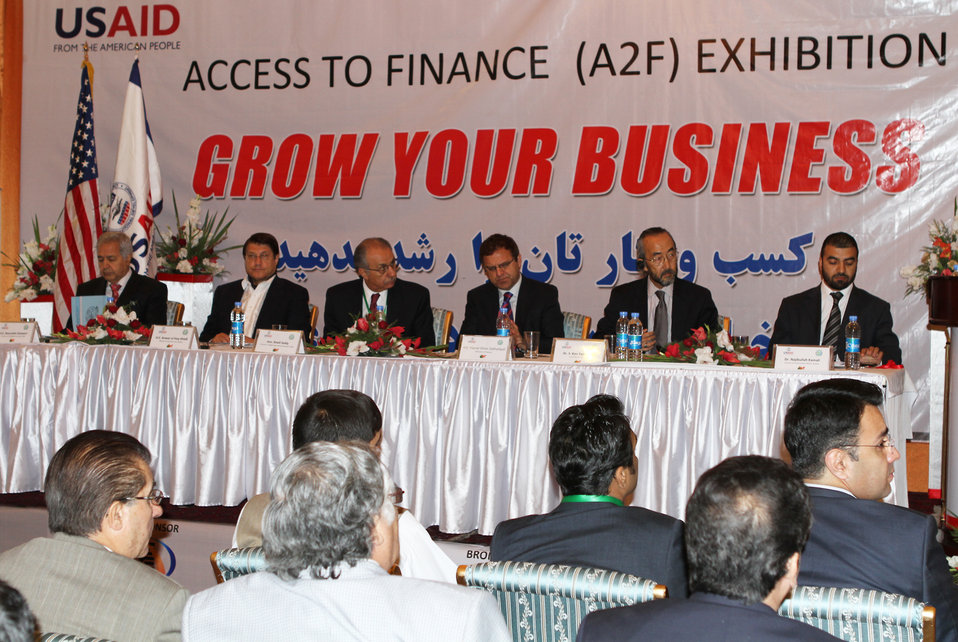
A2F Exhibition

Key Speakers at A2F Exhibition